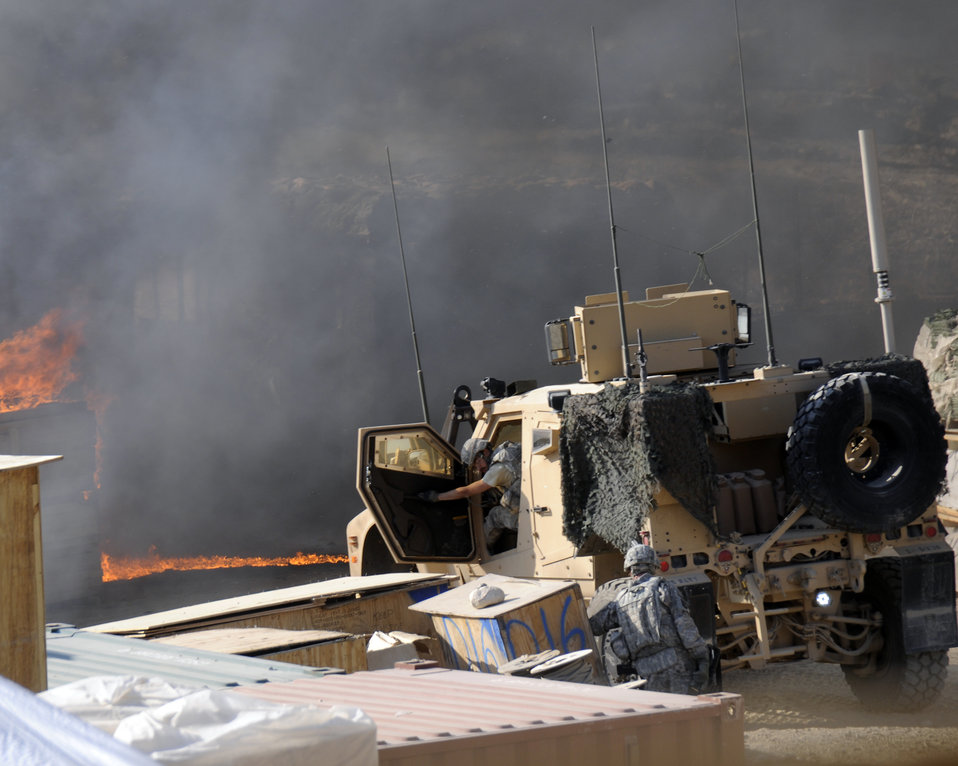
Senior Airman Chanise Epps

Air Force photographer Chanise Epps documenting attack